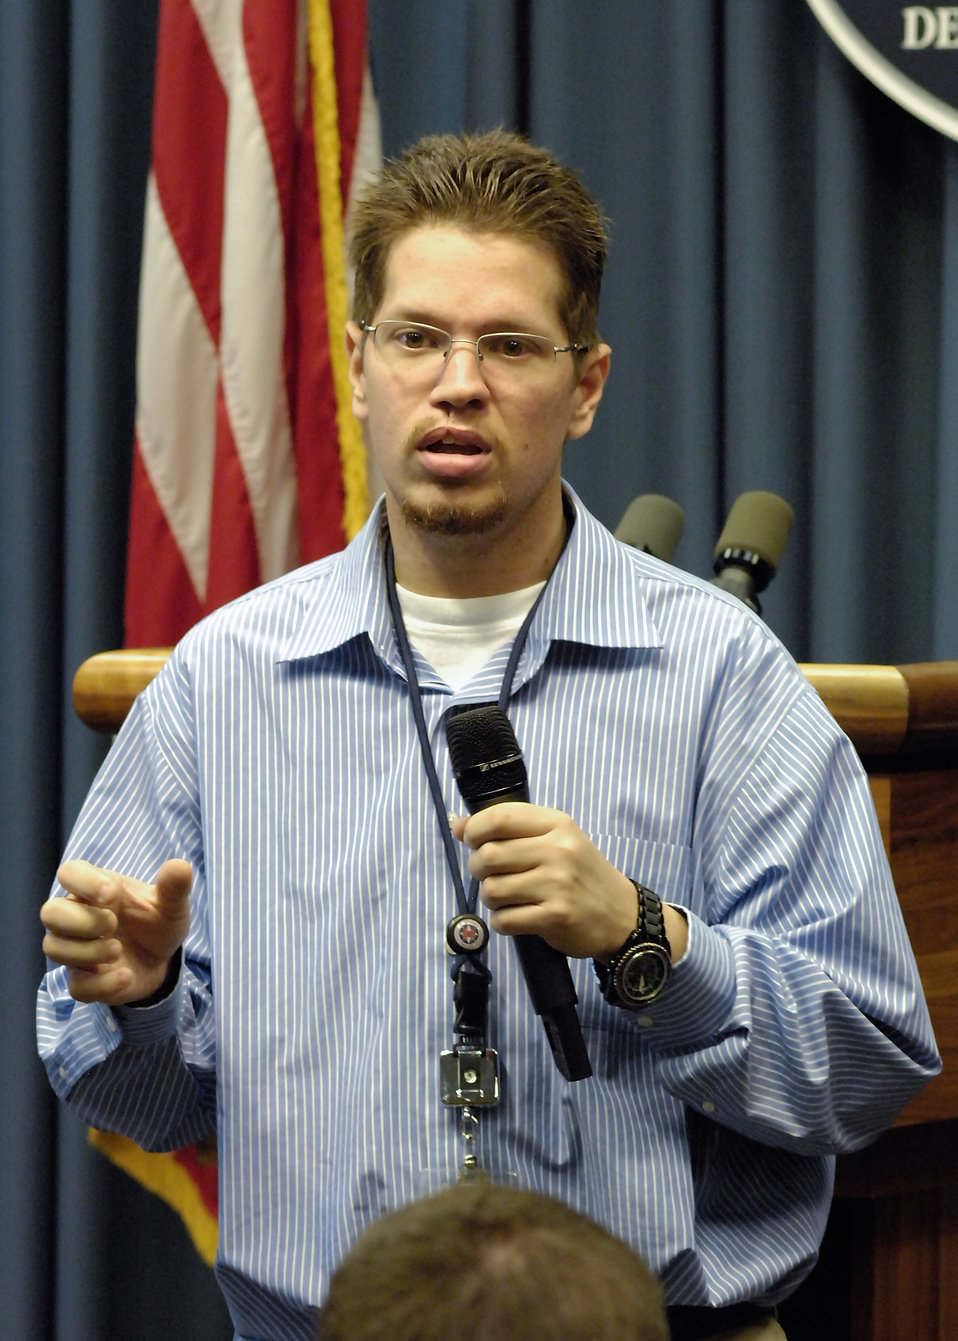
Angel Ortiz, HACU, IT Team, US Department of Agriculture Hispanic Services Institute and a HACU Alumni, explains the Information Technology (IT) policy at the Department of Agriculture to students at the USDA HACU and 1994 Tribal College Summer Internship Orientation Program in Washington, DC, Monday, June 7, 2010. USDA Photo 10di1390-110.